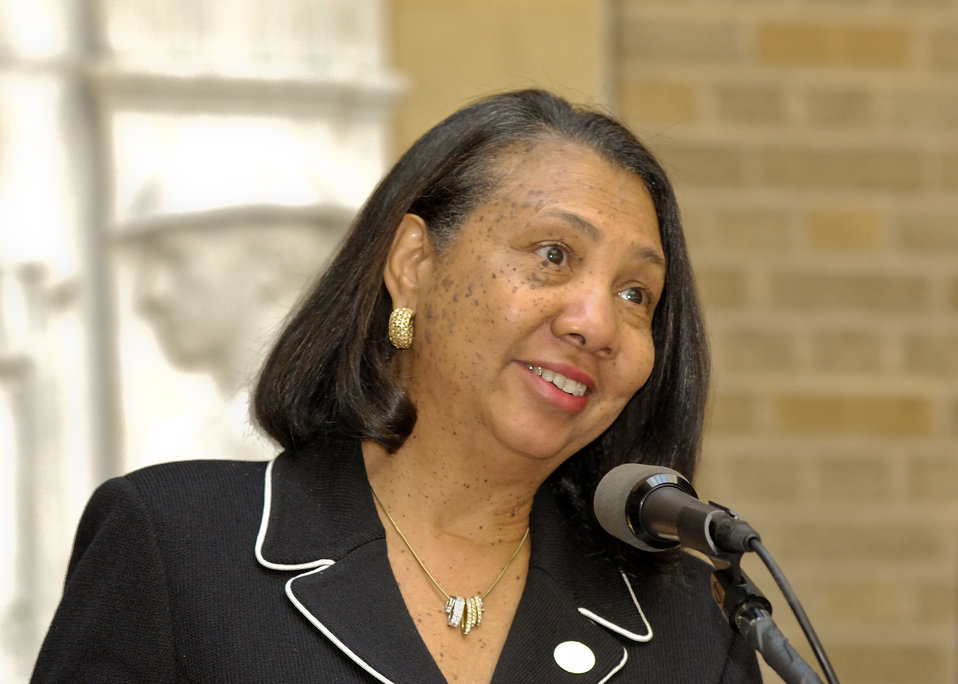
US Department of Agriculture Deputy Assistant Secretary for Administration Alma Hobbs, addresses the importance of setting goals and the possibilities for those who do at the Departmental Management Intern Orientation Program held at the US Department of Agriculture in Washington, DC, Tuesday, June 8, 2010. USDA Photo 10di1394-11.